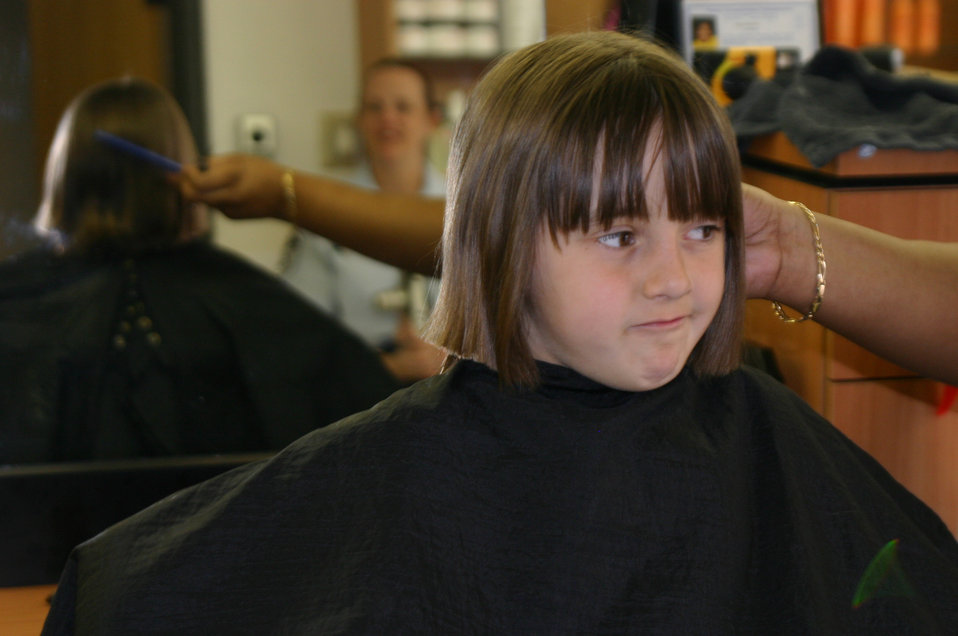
Sheppard girl donates hair to national organization for the second time

SHEPPARD AIR FORCE BASE, Texas -- Adriana Breuer looks at her mother after the final 11-inch lock of hair was cut away at the beauty shop here. Adriana is donating hair to Locks of Love, an organization that provides hairpieces to children who are suffering from long term hair loss. She is the daughter of Master Sgts. Rodney and Lisa Breuer.